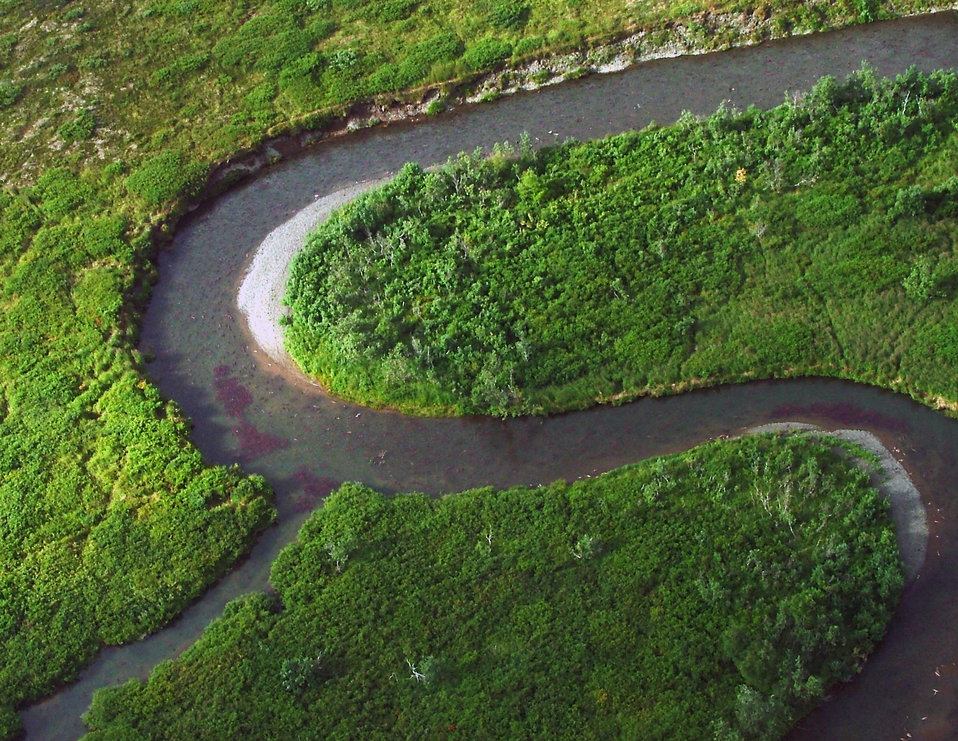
sockeye salmon migration aerial view